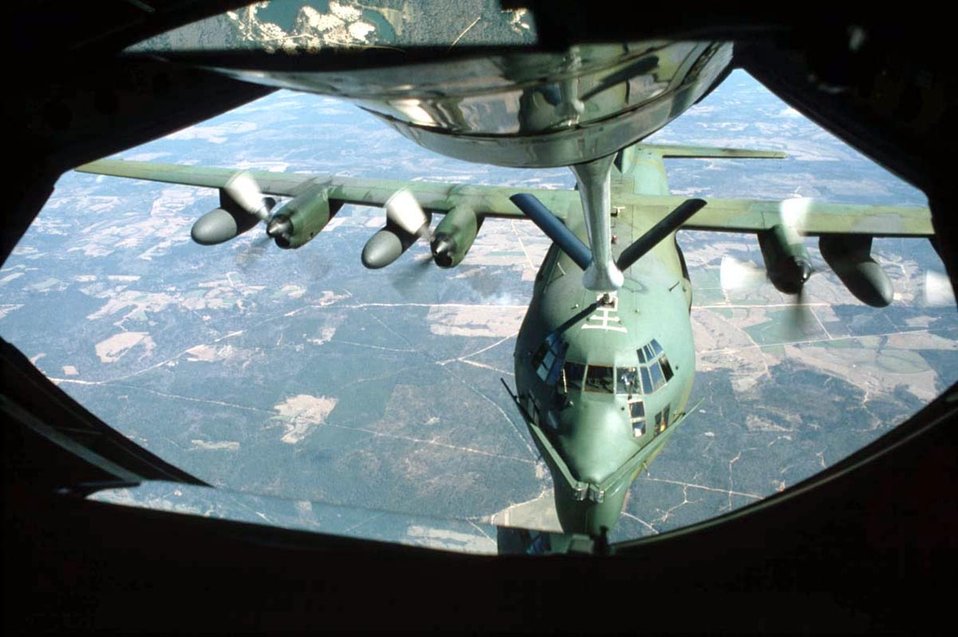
Special Ops Hercules

FILE PHOTO -- The HC-130P/N is an extended-range, combat search and rescue (CSAR) version of the C-130 Hercules transport. Its mission is to conduct day or night operations to effect the recovery of downed aircrew or other isolated personnel from hostile or denied environments during war.